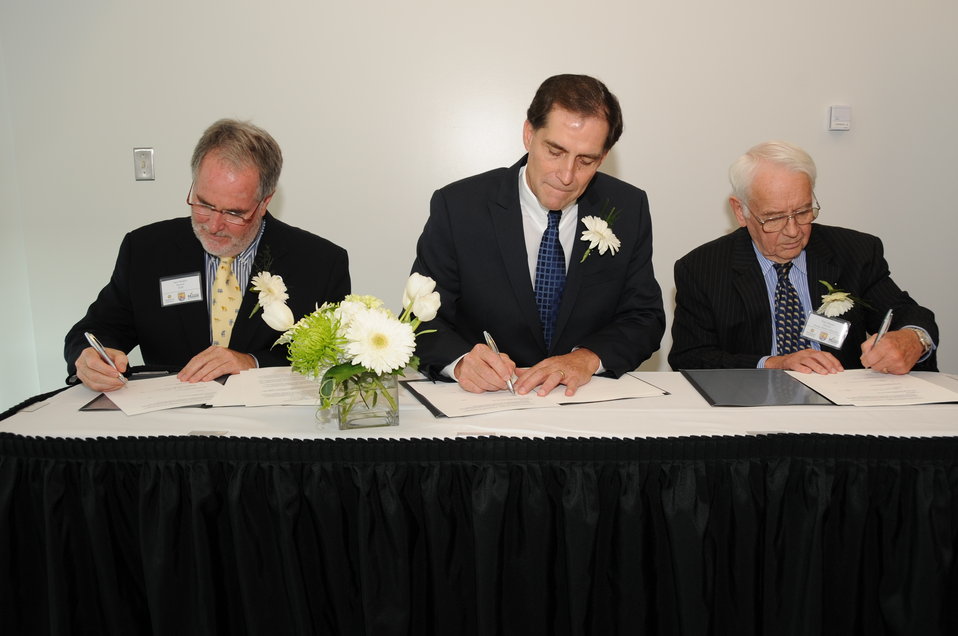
Together in Conservation

Memorandum of Understanding Signing Ceremony with U.S. Fish and Wildlife Service, Smithsonian Institution, and George Mason University. October 26, 2012